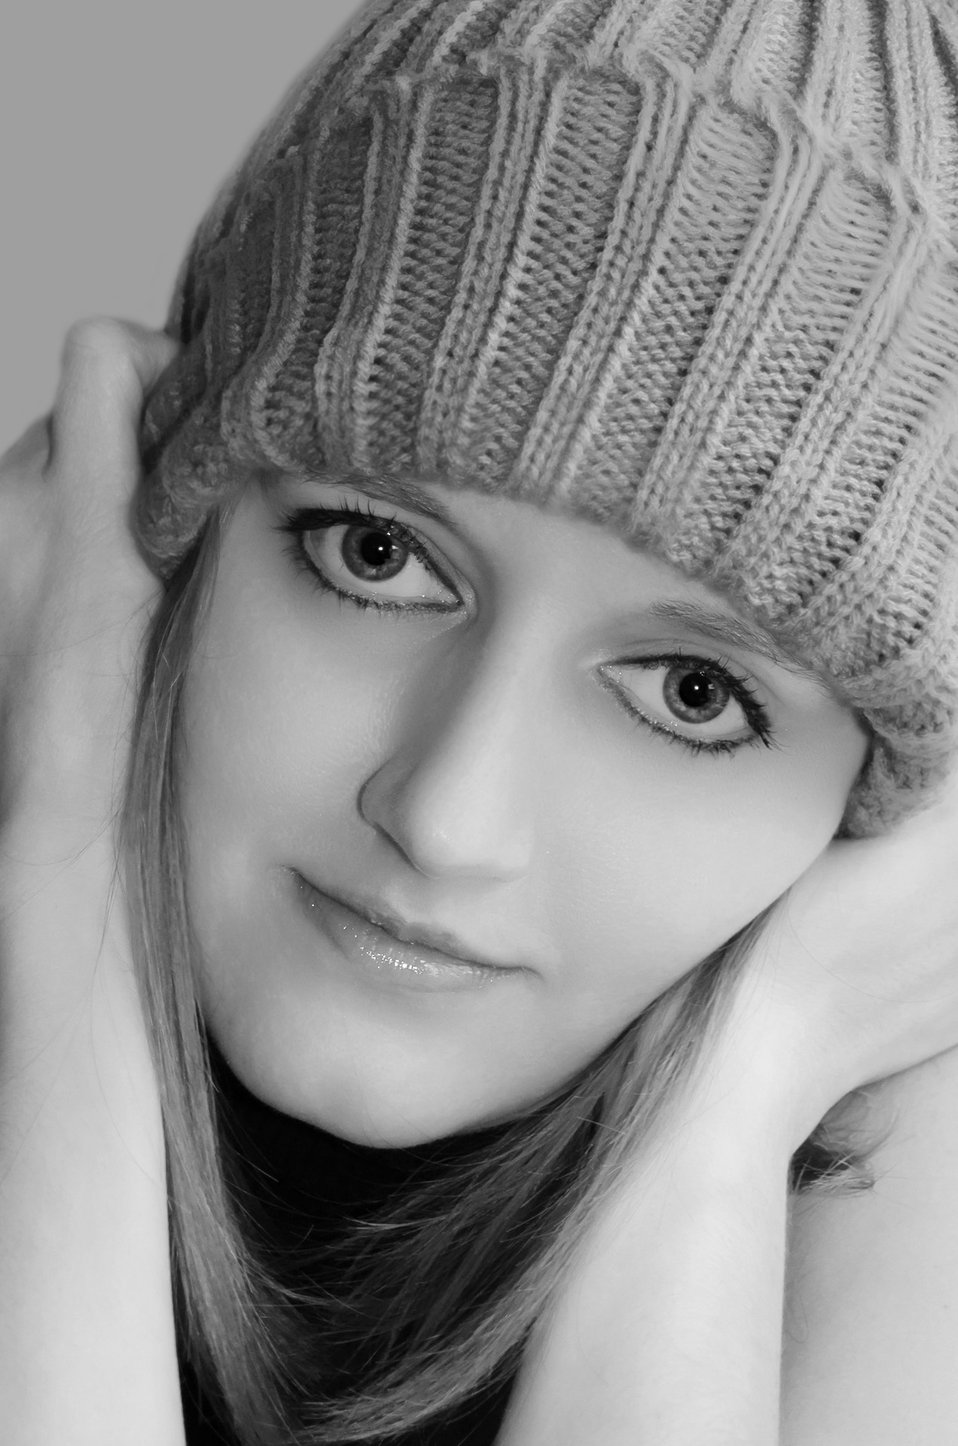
Woman and hat - black and white.